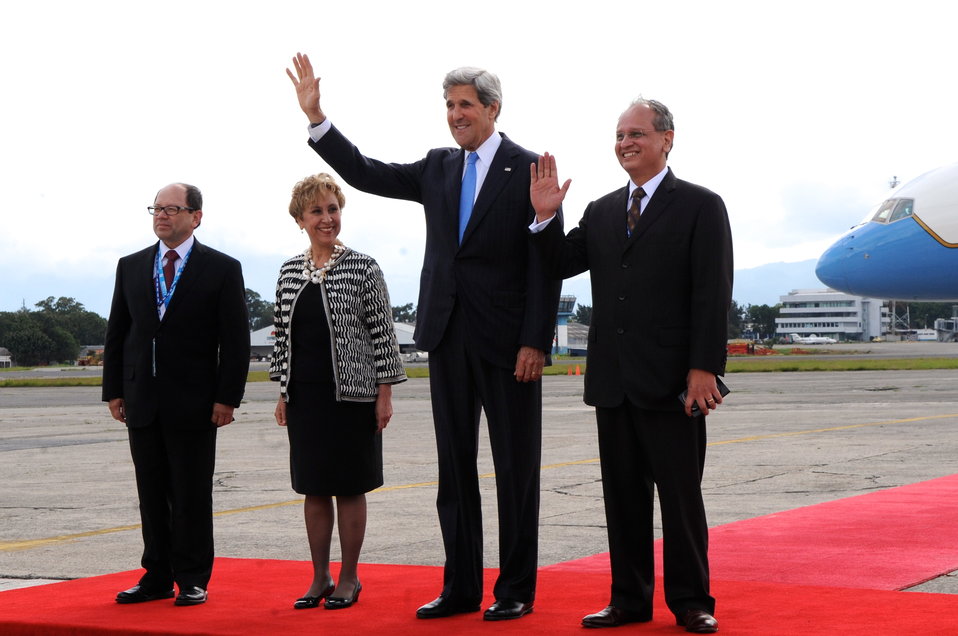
Secretary Kerry Arrives in Antigua, Guatemala

U.S. Secretary of State John Kerry is greeted by U.S. Ambassador to Guatemala Arnold Chacon, Guatemalan Deputy Foreign Minister Rita Claverie, and Guatemalan Vice Minister of Foreign Affairs Ivan Espinoza upon his arrival in Antigua, Guatemala, on June 4, 2013.